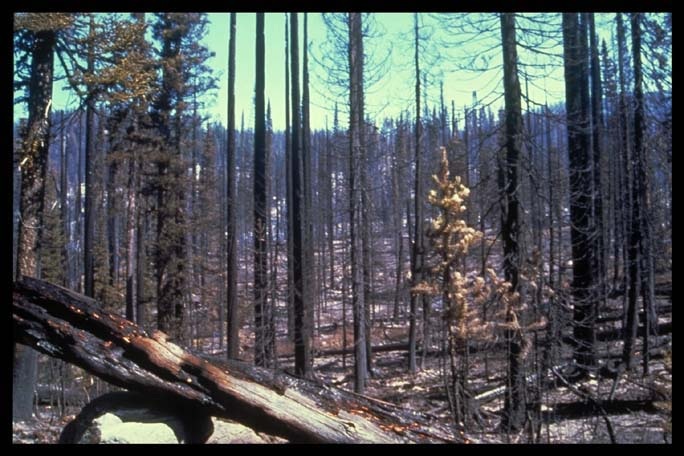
Burned area